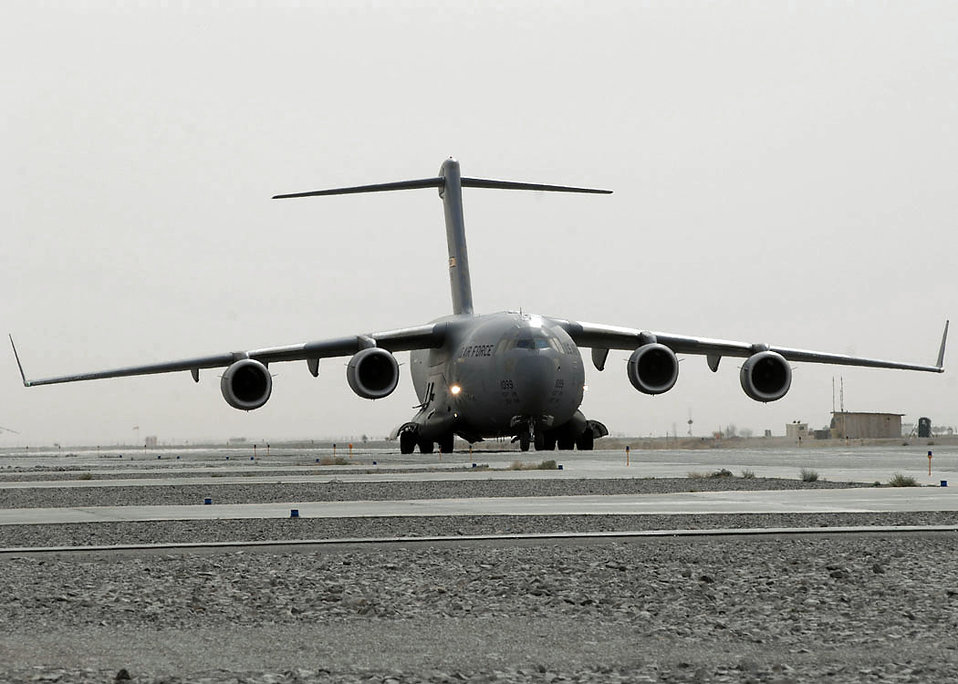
July 20 airpower summary: C-17s support heavy airlift missions

A C-17 Globemaster III prepares to take off on a mission in support of Operation Enduring Freedom.